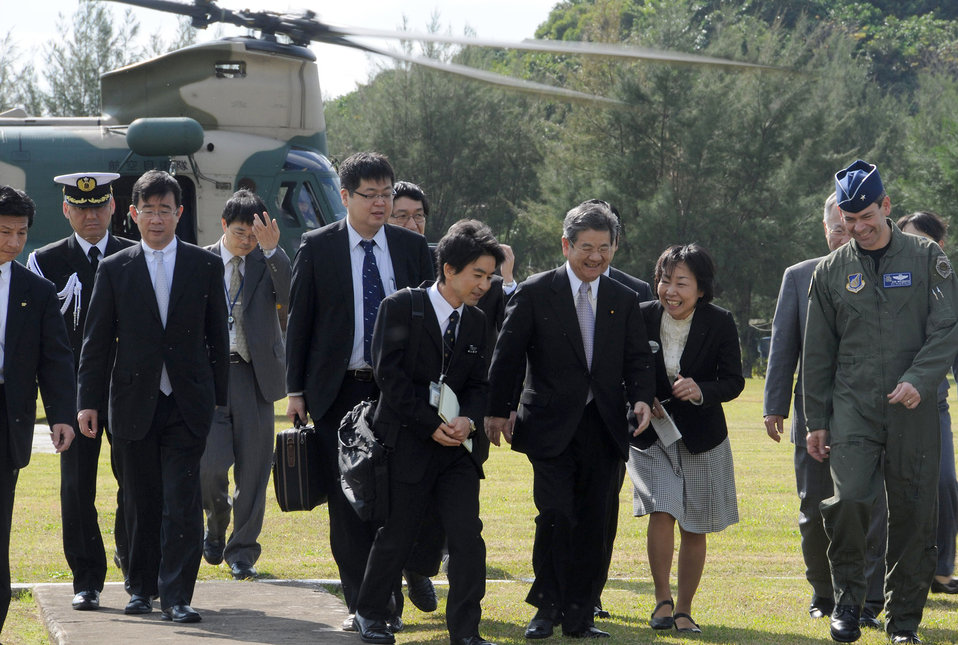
Japan Minister of Defense Visits Kadena

Japanese Defense Minister Toshimi Kitazawa met with Brig. Gen. Kenneth S. Wilsbach, the 18th Wing commander, Jan. 20, 2011, for a mission briefing and tour of Kadena Air Base, Japan. During the visit, Mr. Kitazawa said it is important for both Japan and the U.S. to build better understanding, for the Okinawan people, of the importance of Kadena AB's presence by engaging with the community to address their concerns.